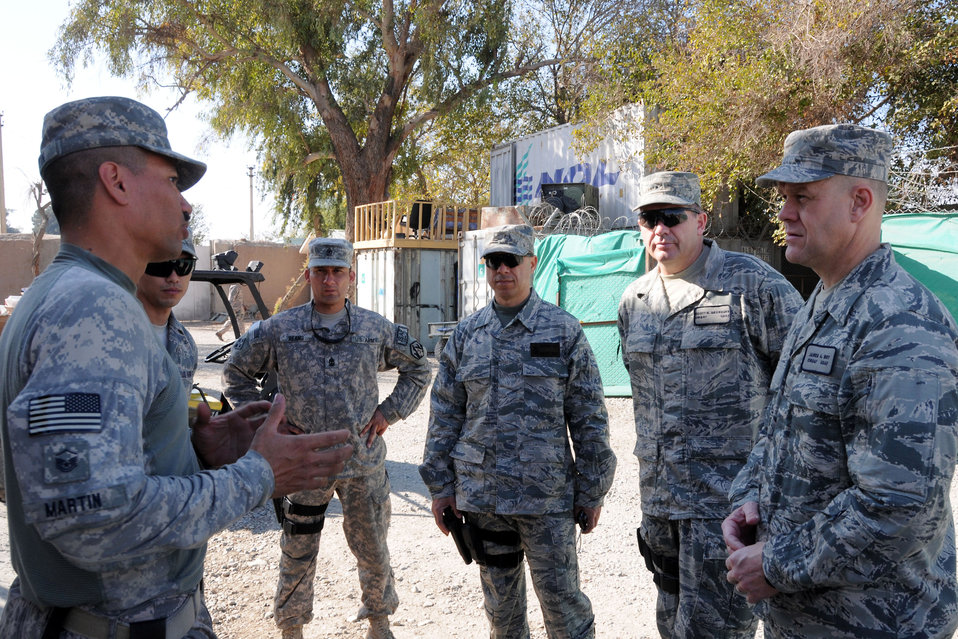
Master Sgt. Martin Lane speaks to Chief Master Sgt. of the Air Force James A. Roy

Master Sgt. Martin Lane (left) speaks to Chief Master Sgt. of the Air Force James A. Roy (right) about lessons learned and deployment process improvements Nov. 28, 2009, in Jalalabad, Afghanistan. Sergeant Lane is the Nangarhar Provincial Reconstruction Team communications superintendent deployed from Hickam Air Force Base.